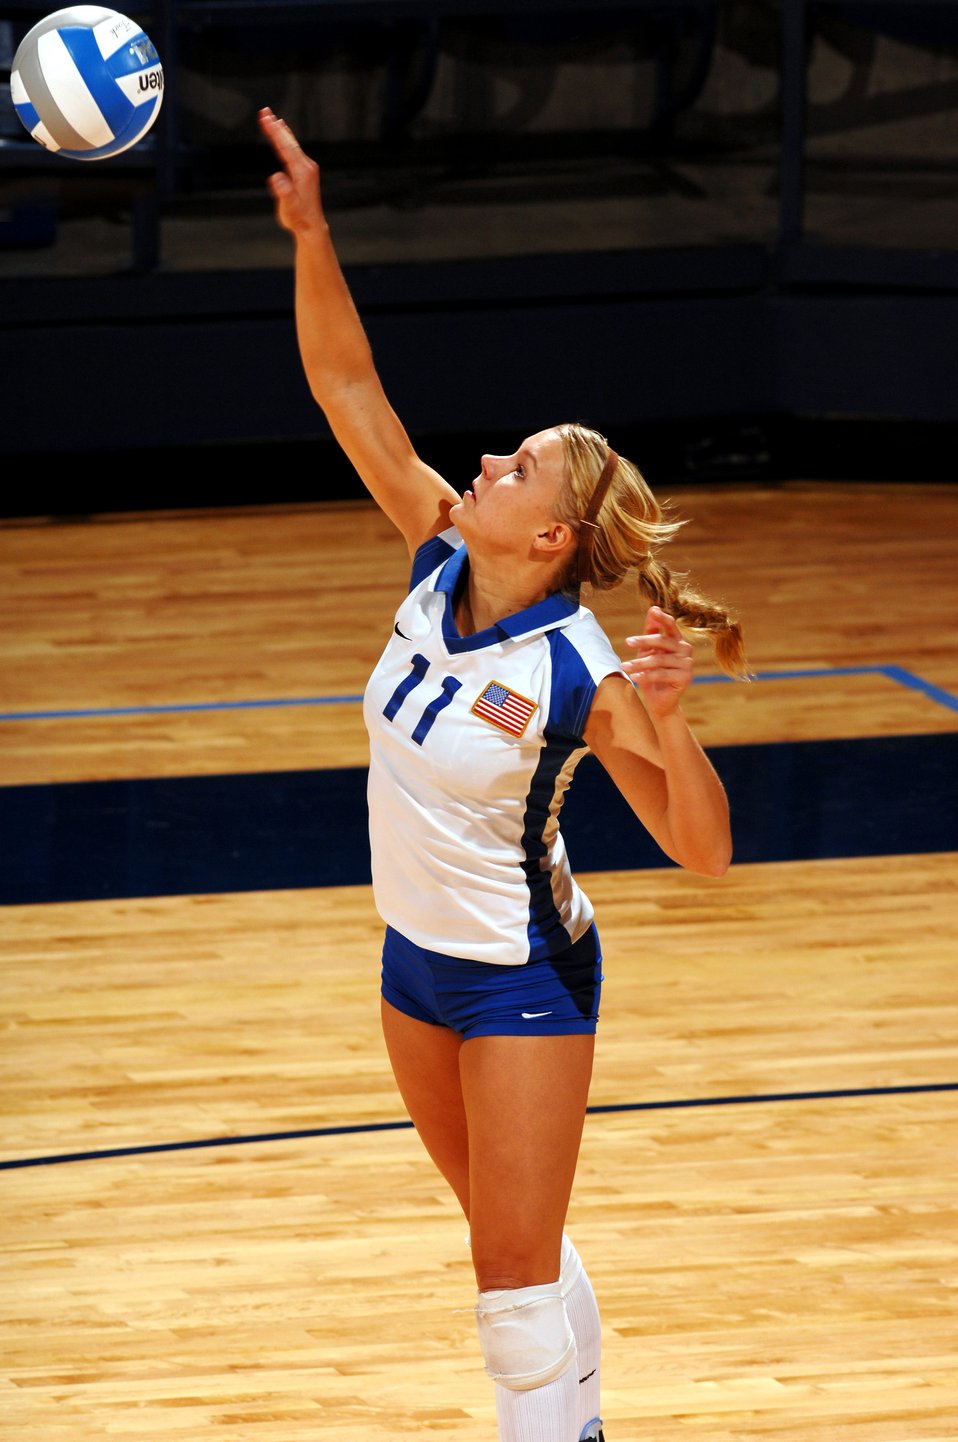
Volleyball: Falcons suffer tough losses

U.S. Air Force Academy senior Kim Kaballis serves against Utah in volleyball action as the Falcons were swept in three sets Sept. 28 at Clune Arena at the Academy in Colorado. The Falcons return to the road to take on the San Diego State Aztecs Oct. 4 before heading to face the University of Nevada, Las Vegas Oct. 6.